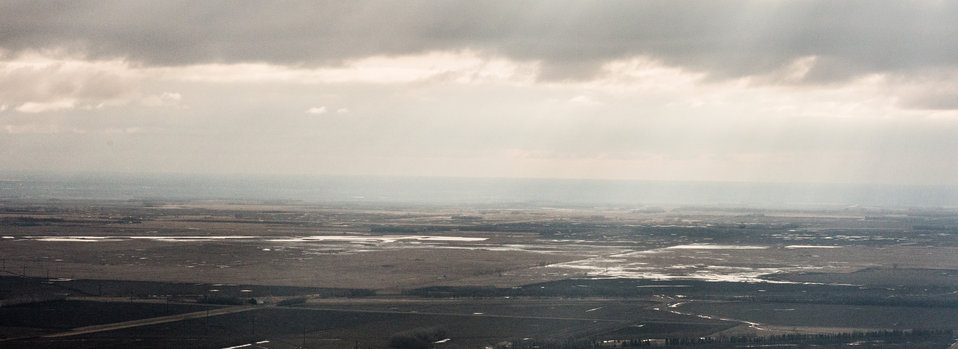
English Coulee Watershed Dam, a Public Law PL83-566 Small Watershed Program, in Grand Forks County, ND, on Tuesday, April 30, 2013. To learn about the Red River Basin Initiative, see www.mn.nrcs.usda.gov/news/features13/RRBI.html.